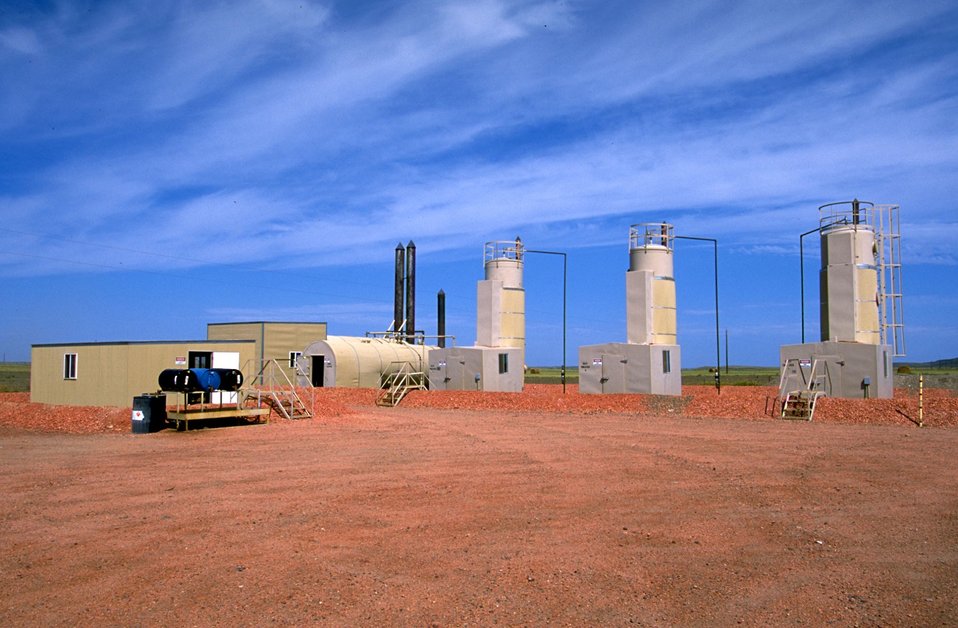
Test and production treaters in oil field